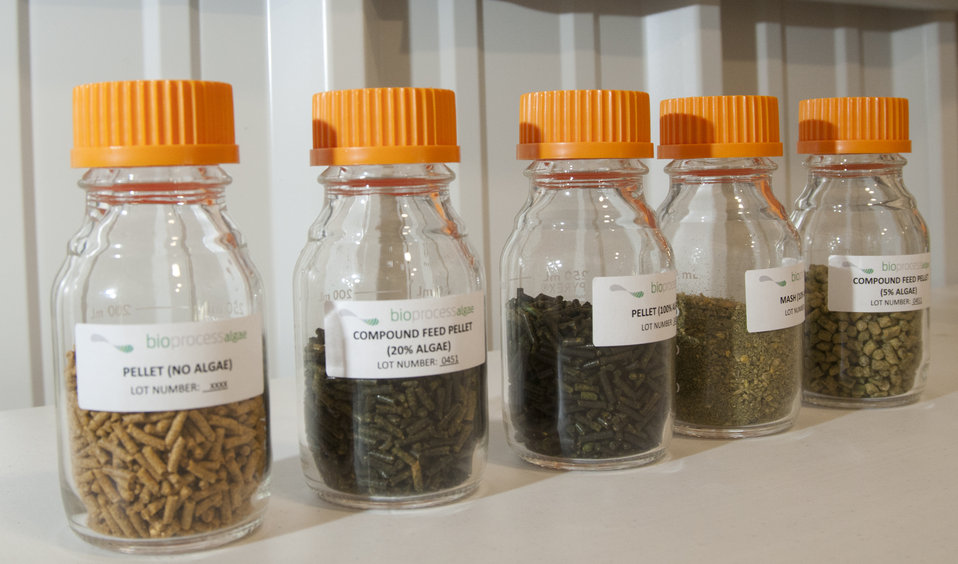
These are samples of animal feed produced from algae. Algae are high in quality protein, vitamins and other vital compounds that add value to animal feeds. Many species of algae produce large quantities of omega-3 fatty acids that are believed to beneficial for cardiovascular systems, immune systems, and cognitive development. Fish has long been the traditional source of omega-3s in human diets and now poultry feed can be enriched to produce omega-3 enriched eggs with algae. Agriculture Secretary Tom Vilsack toured the BioProcess Algae facility at Green Plains Renewable Energy (GPRE), Inc. on Friday, and Apr.15, 2011 in Shenandoah, IA that is producing such products.